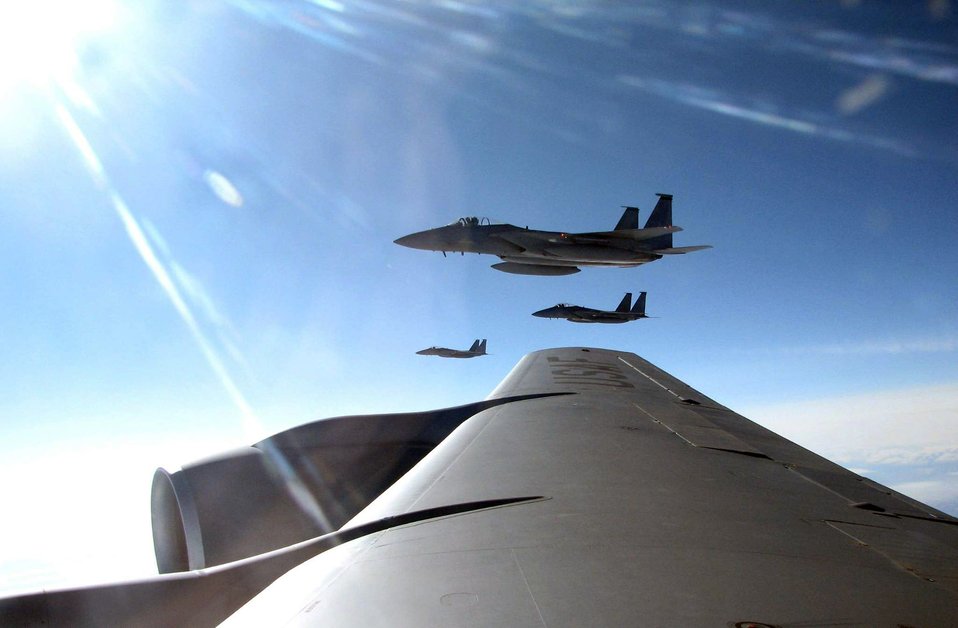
Alaska ANG KC-135s provide edge anytime, anywhere

Three F-15 Eagles from the 18th Wing at Kadena Air Base, Japan, fly beside a KC-135 Stratotanker after refueling May 8 over Alaska. The aircraft are part of the more than 120 participating in Northern Edge 2008, the largest military training exercise in Alaska. Aircrews train in counter-air, close-air-support and air-interdiction missions. An Alaska Air National Guard KC-135, from Eielson Air Force Base's 168th Air Refueling Wing delivered the fuel during the mission.